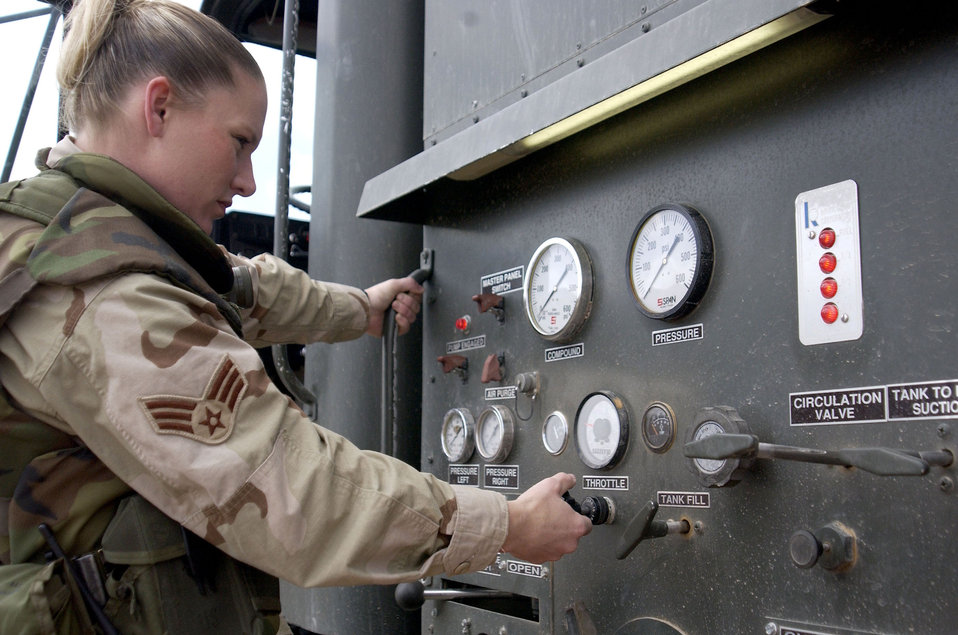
Equipment check

OPERATION IRAQI FREEDOM -- A firefighter does an equipment check on a fire truck at a forward deployed Operation Iraqi Freedom location.